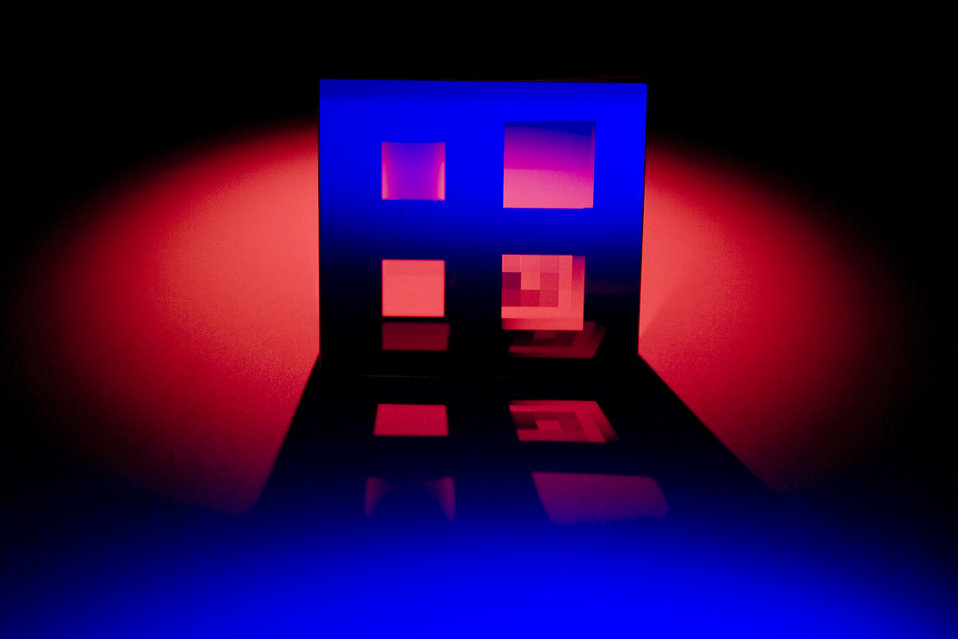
Spatial shapers based on spatially varying distribution of metal pixals on a glass substrate have been developed for Omega using EP lithography techniques.

The photograph shows one of the shapers with four different zones designed for apodization , shaping, alignment and calibration.